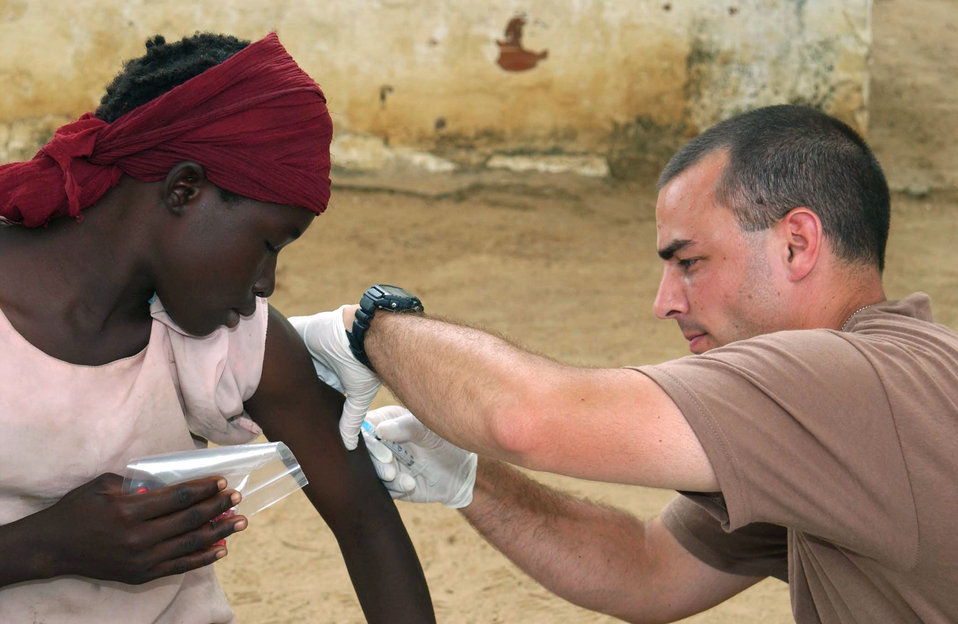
Reservists provide humanitarian aid in Chad

CAMP LOUMIA, Chad -- Staff Sgt. Rick English immunizes a Chadian girl while on a humanitarian mission here. He is a medical technician with the 439th Aerospace Medical Squadron at Westover Air Reserve Base, Mass. The medical team saw more than 2,800 patients from 16 villages during the 15-day mission.